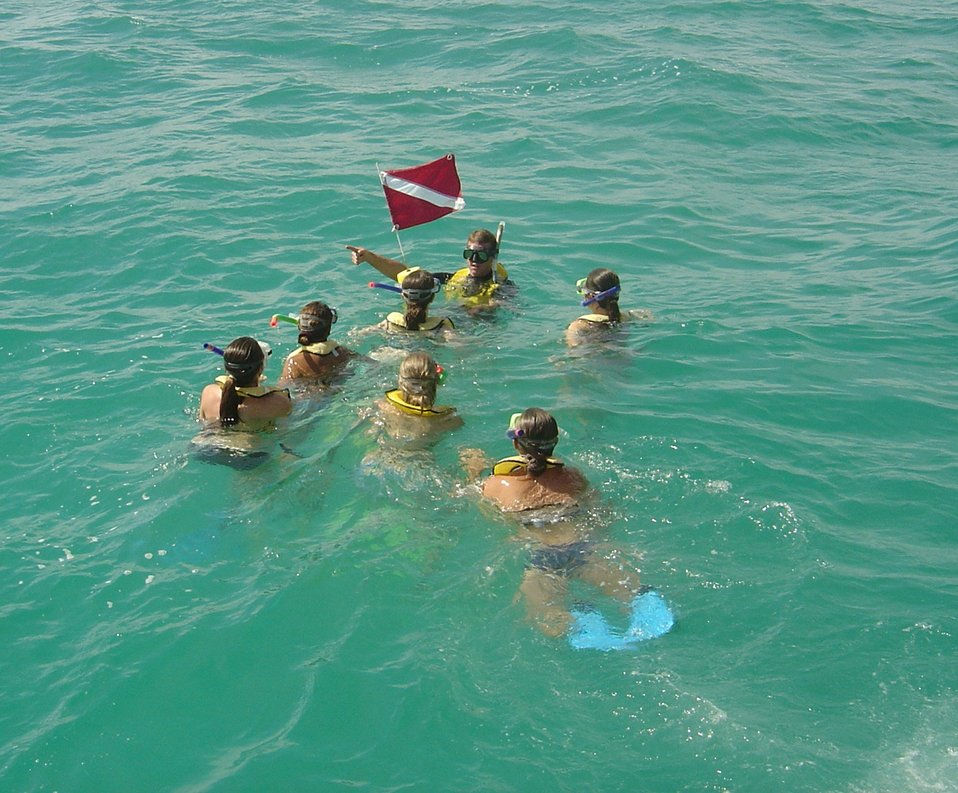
A pod of homo sapiens preparing to dive